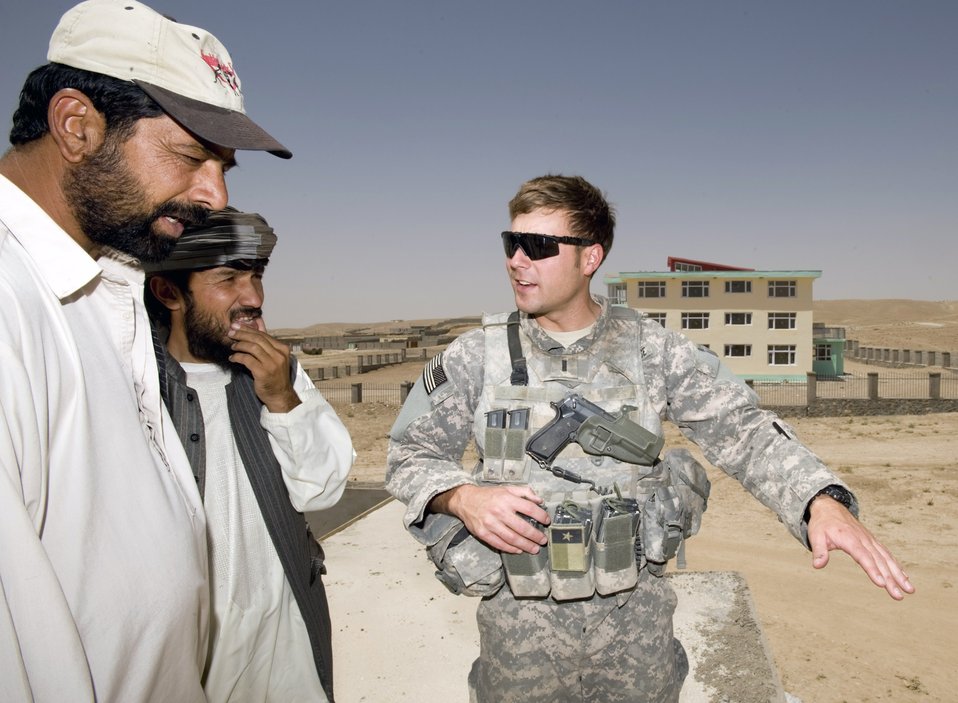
Servicemembers strive to brighten future for Afghan youths

1st Lt. Adam Lazar discusses progress on the construction of a new fire station Aug. 10 at Qalat, Afghanistan. As an engineer for the Zabul Provincial Reconstruction Team, Lieutenant Lazar oversees 25 construction projects contracted out to local firms.